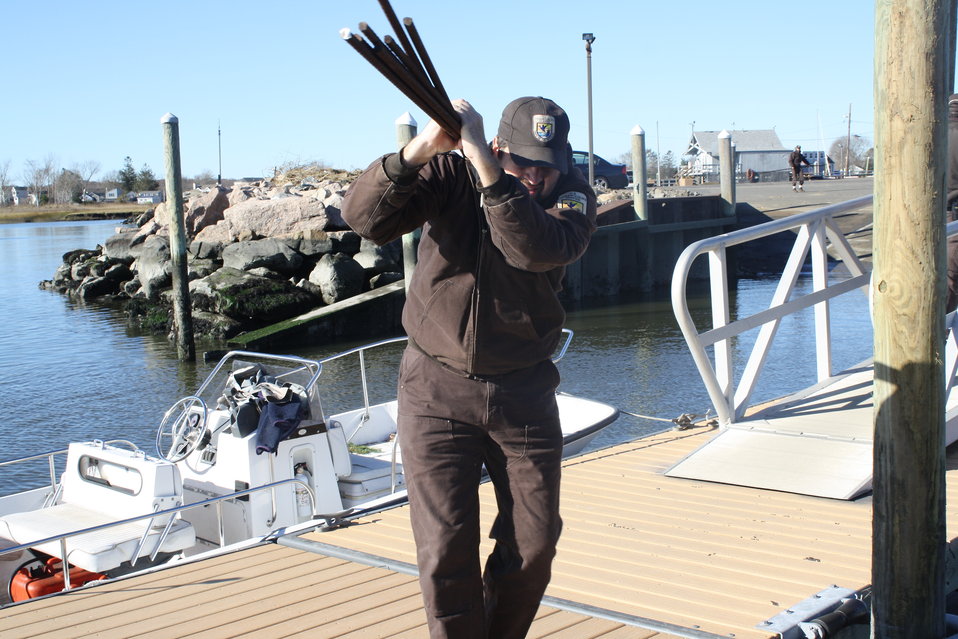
Stewart B. McKinney National Wildlife Refuge (CT)

Refuge Manager Rick Potvin loads a boat with materials to begin repairs to the refuge's Outer Island Unit, after Hurricane Sandy.